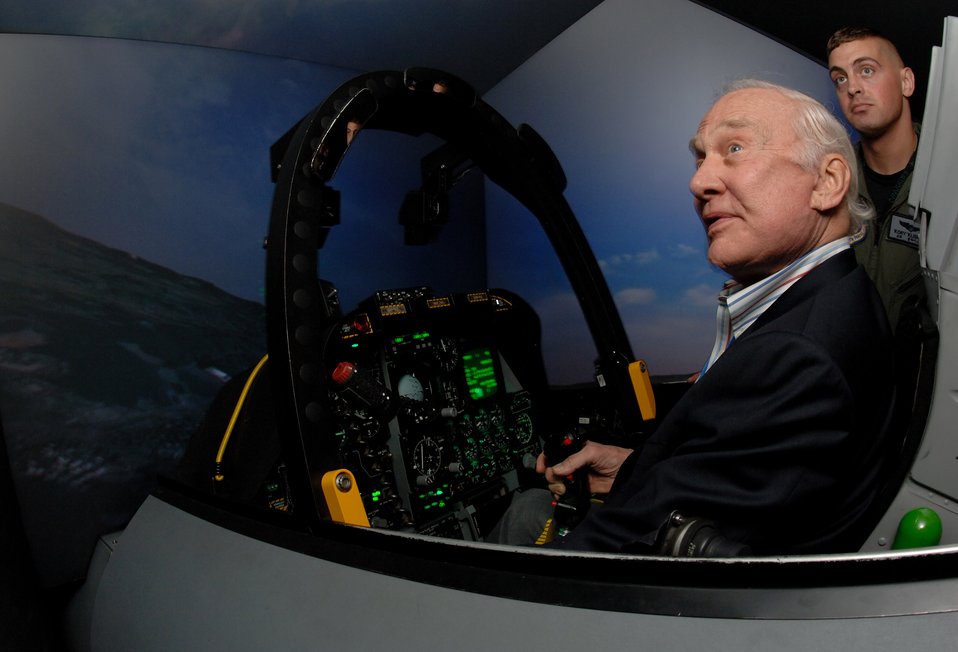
Korean War aces enlighten multitudes about their exploits

Retired Korean War fighter pilot and Apollo XI astronaut Col. Buzz Aldrin pilots an A-10 Thunderbolt II simulator Sept. 11 while Capt. Kory Klismith observes. Colonel Aldrin along with seven other Korean War aces was visiting Osan Air Base, South Korea, during a week-long observance of the Air Force's 60th Anniversary. Captain Klismith is a pilot in the 25th Fighter Squadron.